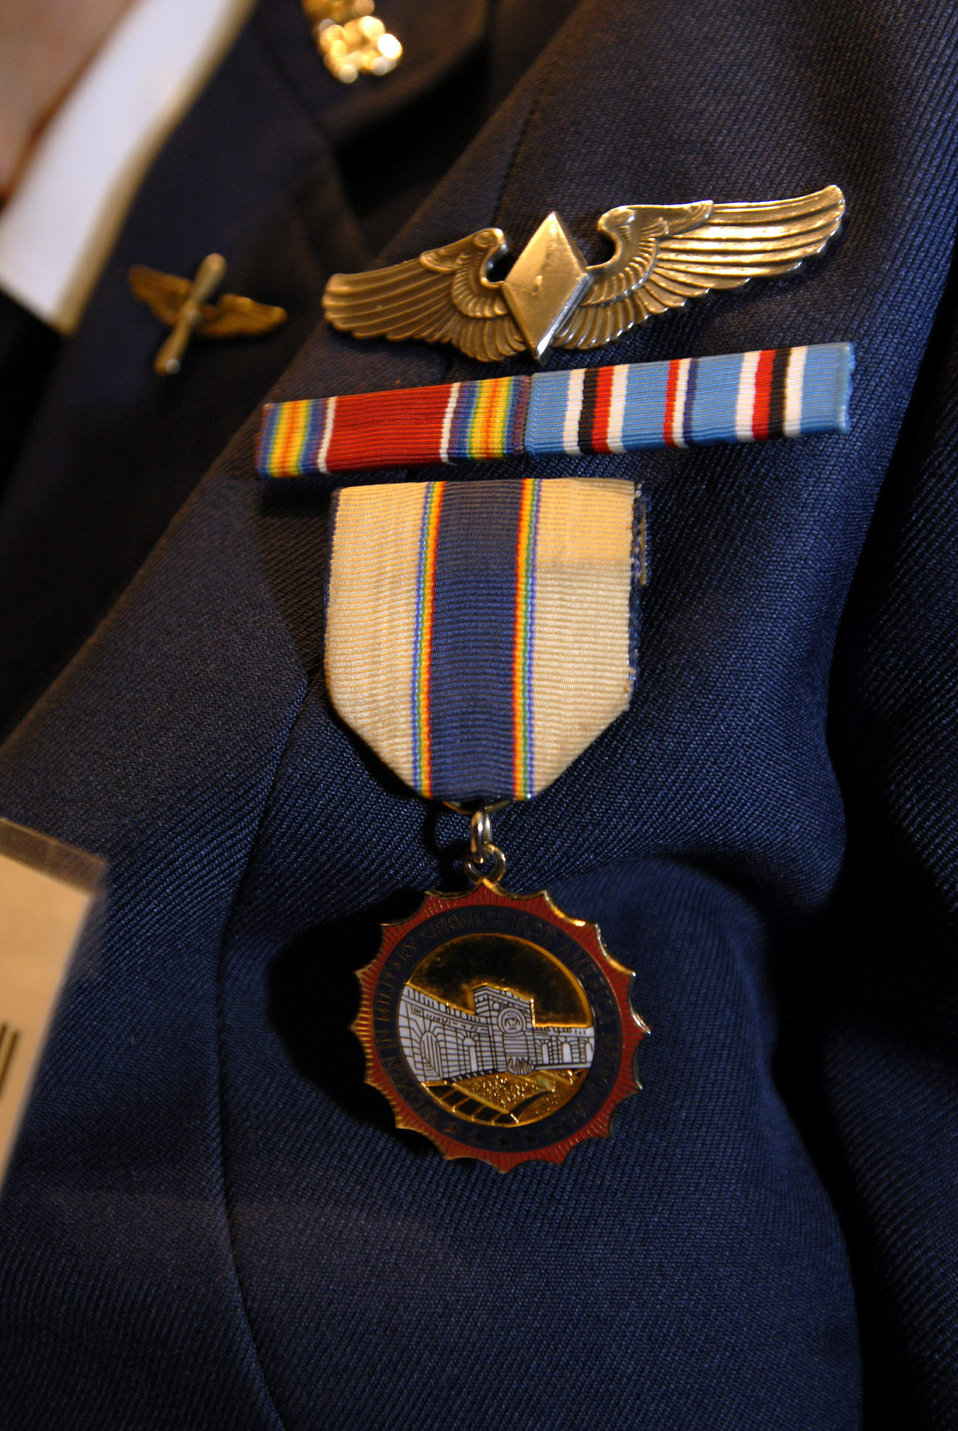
WASPs awarded Congressional Gold Medal

Betty Wall Strohfus, a Women Airforce Service Pilot from Minnesota, wears her World War II-era unifrom during the Congressional Gold Medal ceremony at the Capitol March 10, 2010. In addition to her medals honoring her service during the war, she also donned her flight wings and a medal she received at the opening of the Women in Military Service for America memorial. More than 200 WASPs attended the event, many of them wearing their World War II-era uniforms.